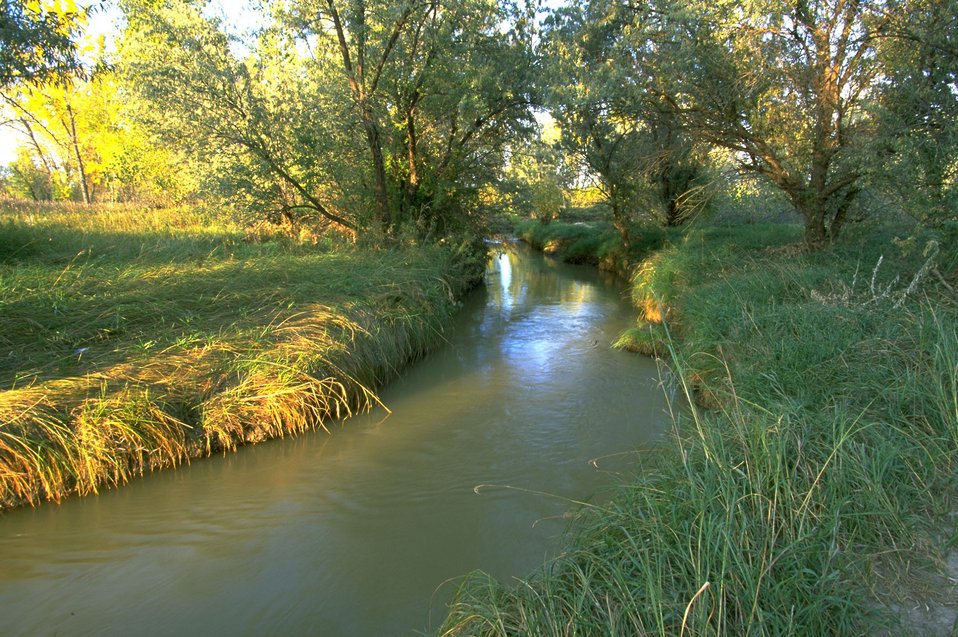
Grass and Trees along Jones Creek